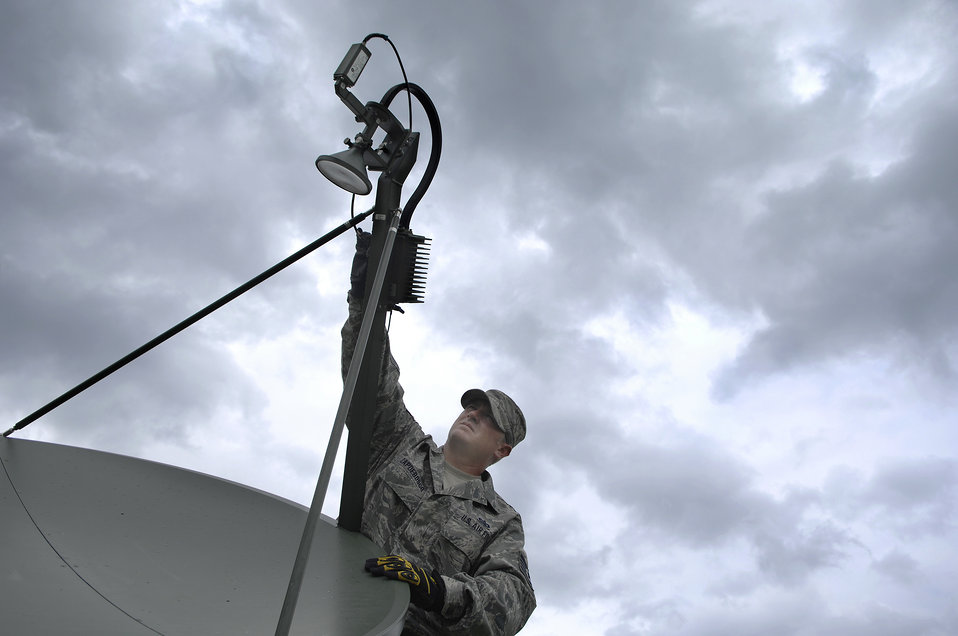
Connected

Tech. Sgt. John Capdeboscq connects a satellite antenna receiver cable providing communication capabilities to the 225th Tactical Operations Center operating out of La Grange High School in Lake Charles, La., in preparation for Hurricane Ike Sept. 12. Tech. Sgt. Capdeboscq is assigned to Louisiana Air National Guard's Air 236 Combat Communications Squadron, Hammond, La.